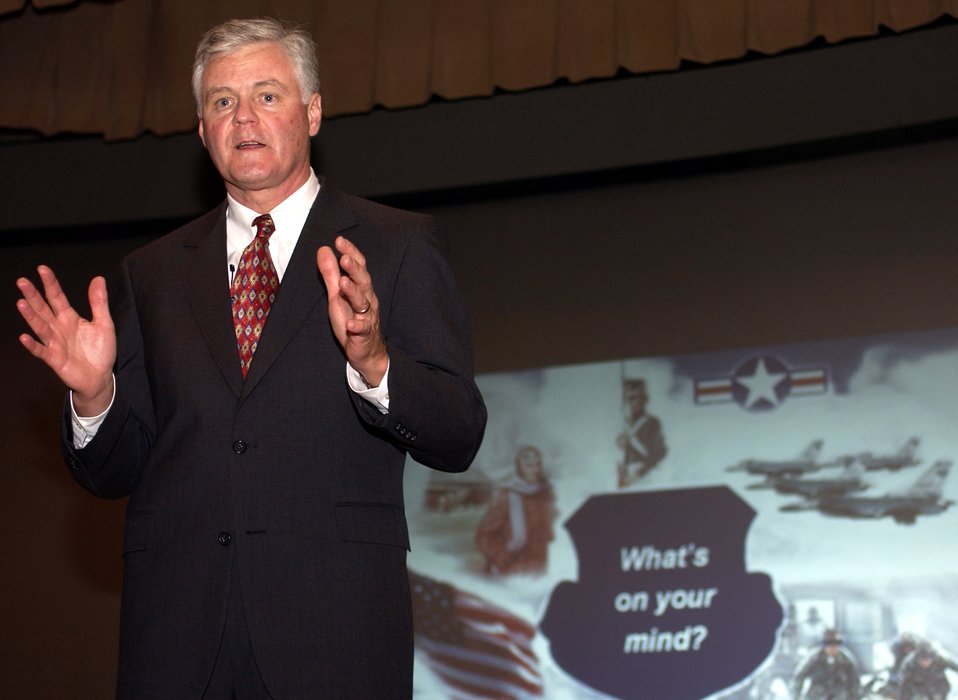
New civilian personnel system brings sweeping changes

LANGLEY AIR FORCE BASE, Va. -- Roger Blanchard speaks with military and civilians about the new National Security Personnel System Oct. 25 during a town hall meeting at Langley Air Force Base, Va. He is the Air Force assistant deputy chief of staff for personnel.